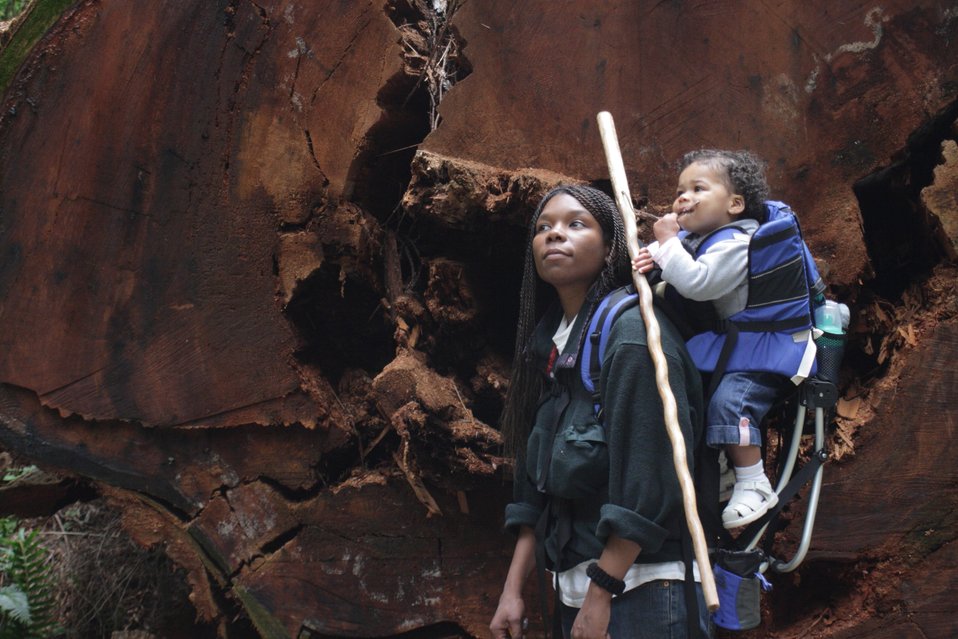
Shannon Smith and daughter Gabby

Shannon Smith, refuge manager at Kaua'i National Wildlife Refuge Complex in Hawaii, and daughter Gabrielle Stutzer hike in California’s Redwood National Park. (Greg Stutzer). .